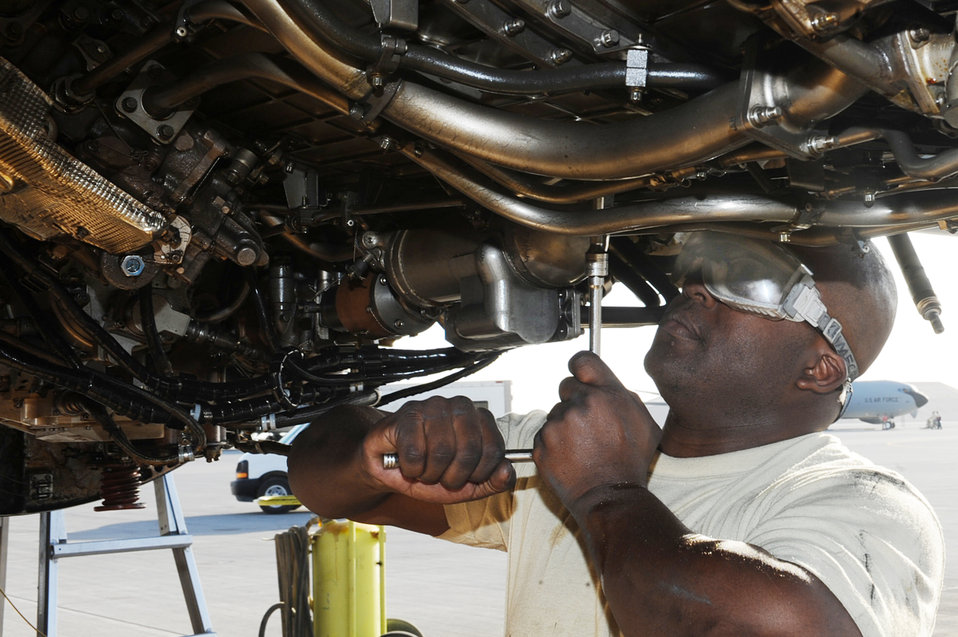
Turn of the screw

Senior Airman Walter Buckner, 34th Aircraft Maintenance Unit aircraft propulsion journeyman, preps a B1-B Lancer engine for a 100-hour inspection March 15, 2010 at an air base in Southwest Asia.